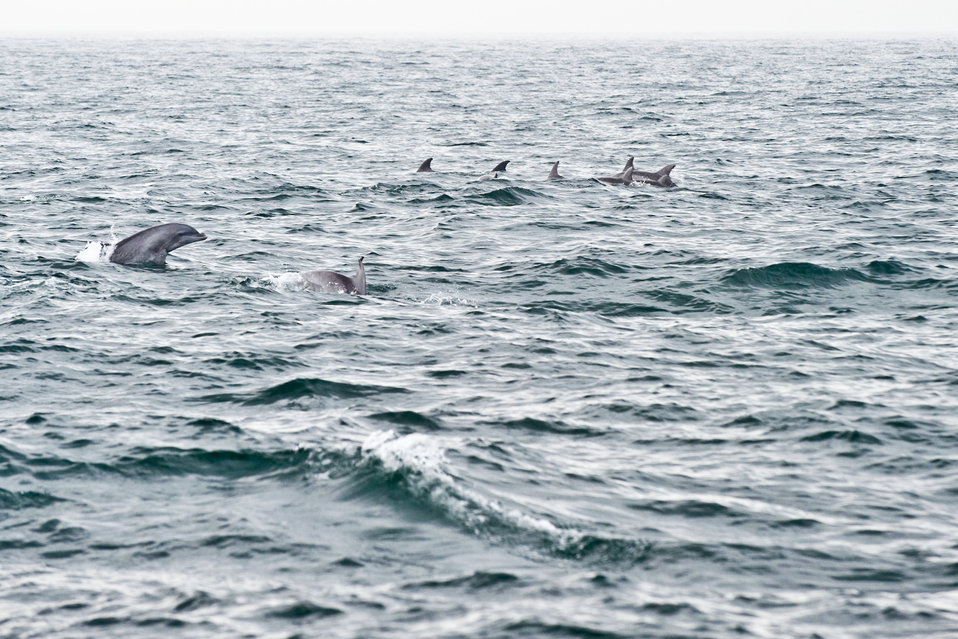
August 2010, Joined by a pod of dolphins

Large pod of dolphins hunting off the coast of Virginia.